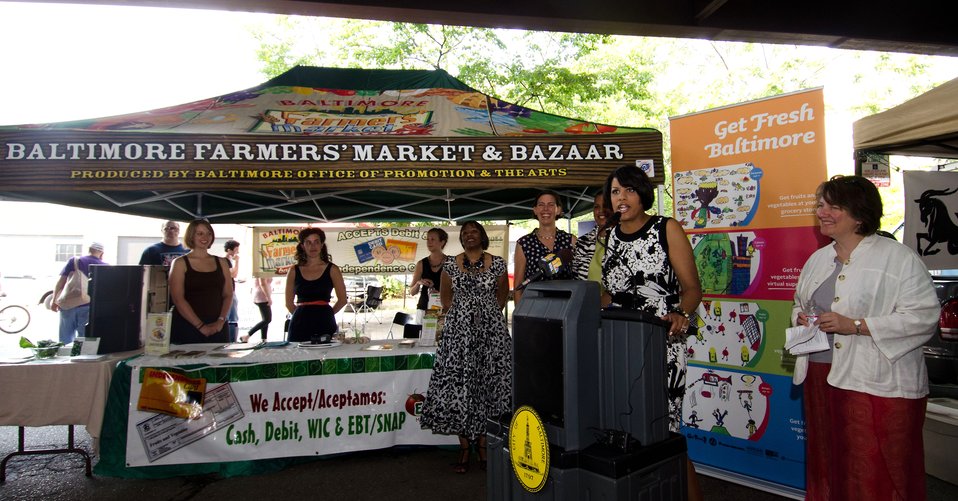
Baltimore Mayor Stephanie Rawlings-Blake (at podium) and Agriculture Deputy Secretary Kathleen Merrigan (right) help launch Baltimore’s Farmers Market and Bazaar use of the U.S. Department of Agriculture’s (USDA) Food Nutrition Service’s (FNS) Supplemental Nutrition Assistance Program (SNAP) Electronic Benefits Transfer (EBT) cards, Baltimore Bucks, and debit card utilizing a wireless connection in Baltimore, MD on Sunday, July 8, 2012. The U.S. Department of Agriculture, Kaiser Permanente of the Mid-Atlantic States, Abell Foundation, the Harry and Jeanette Weinberg Foundation, the Baltimore Community Foundation, Maryland Hunger Solutions, the Maryland Department of Agriculture Baltimore Office of Promotions and the Arts, and Department of Social Services are participating partners in the farmers market.